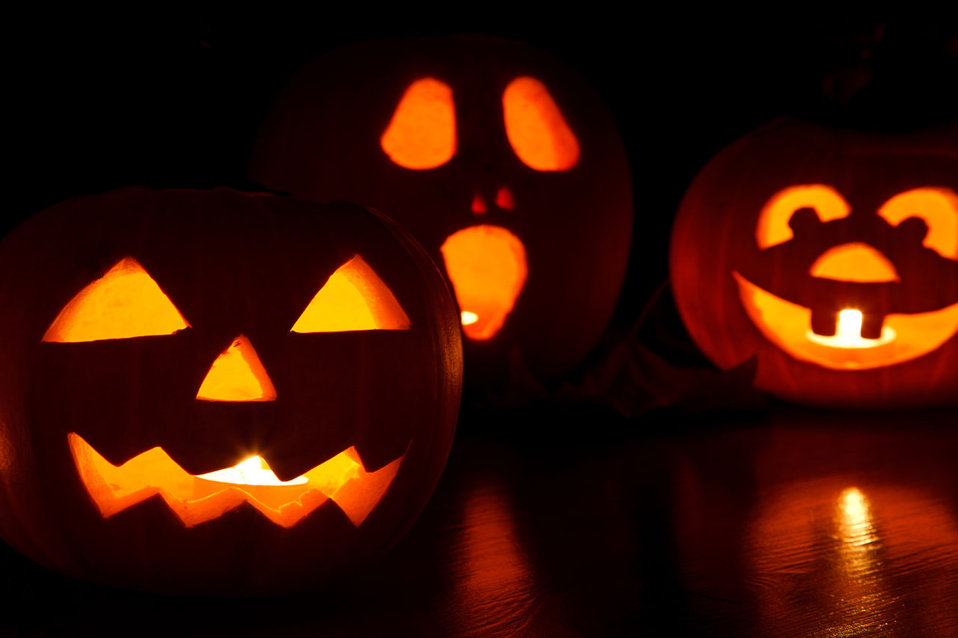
Jack-o-lantern pumpkins

Three jack-o-lantern pumpkins glowing in the dark.